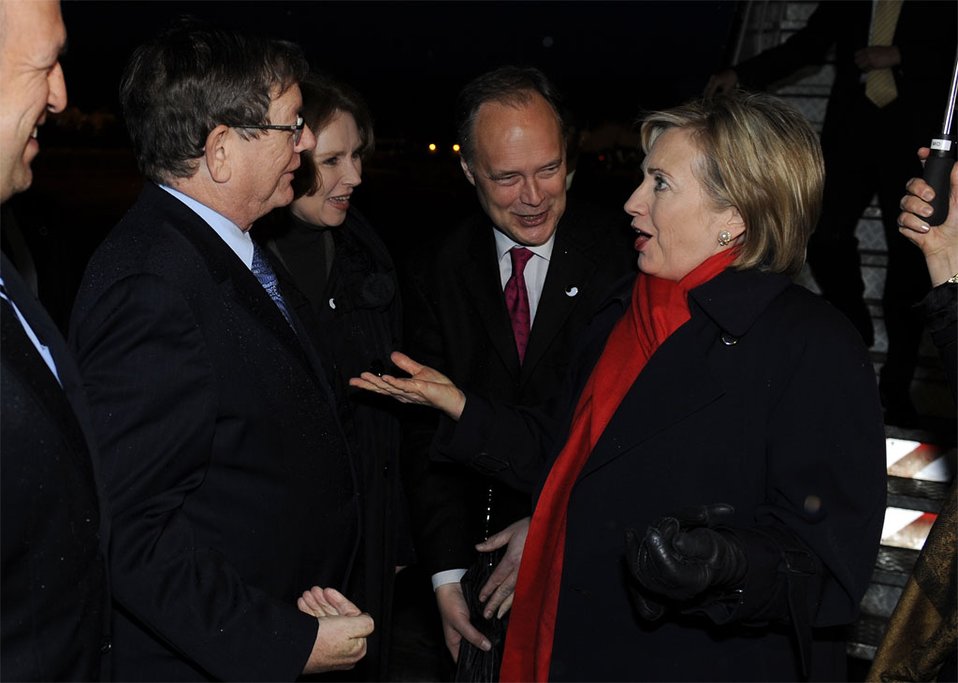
Secretary Clinton Arrives in Jerusalem

U.S. Secretary of State Hillary Rodham Clinton is being welcomed by Mr. Baruch Binah, Deputy Director General for the North American Department, Ministry of Foreign Affairs at Ben Gurion Airport, Israel March 2, 2009.